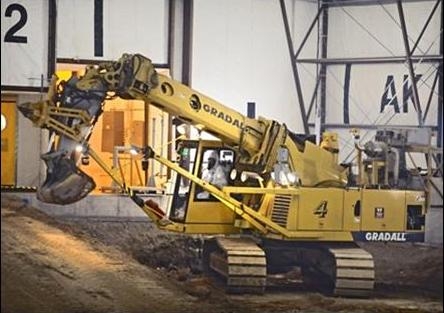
Idaho excavator

Cleanup work funded by the Recovery Act is moving quickly as targeted waste is exhumed and repackaged at the Idaho Site’s Radioactive Waste Management Complex (RWMC). The Accelerated Retrieval Project (ARP) III is 13 months ahead of schedule and has already saved 85 jobs.